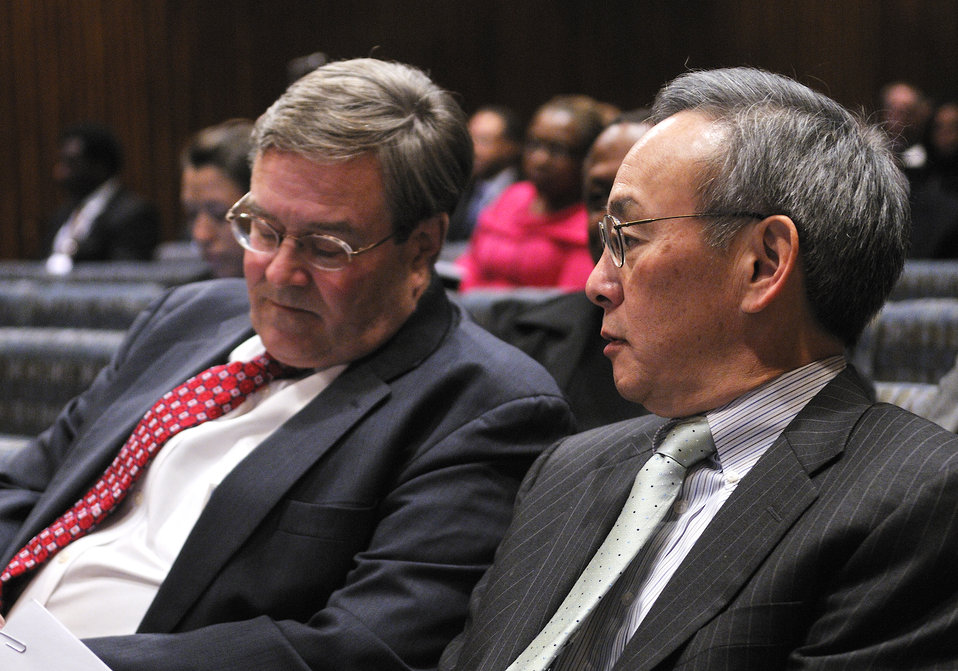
Chief Human Capital Officer Michael Kane and Secretary Chu at the Martin Luther King Jr. Day Celebration at DOE headquarters.